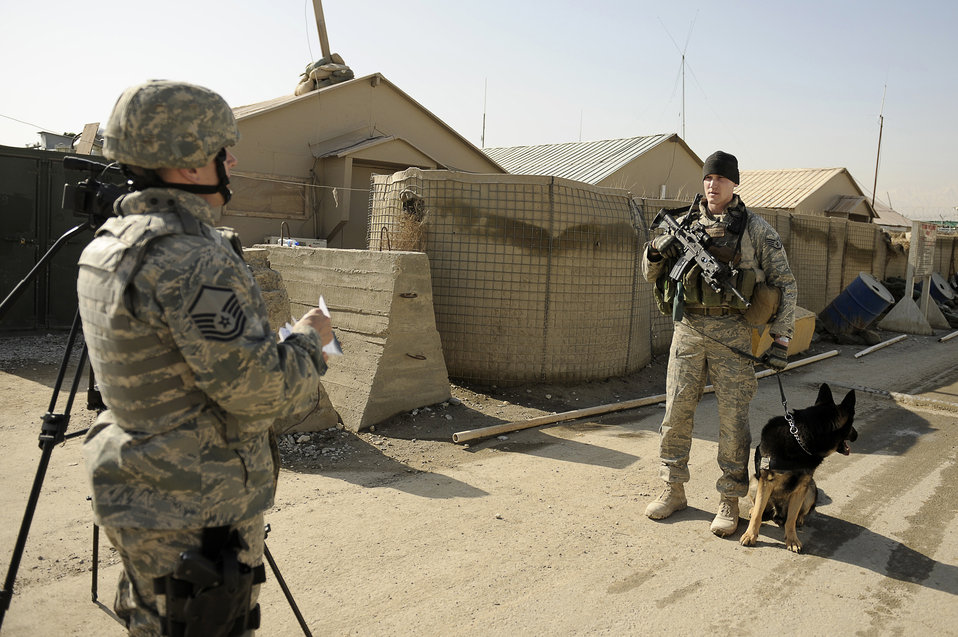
It's a dog's life at Bagram

While Master Sgt. Sebastiano Marino (left) interviews Staff Sgt. Mitchell Stein; his K-9 partner, Artus, watches his back at Bagram Airfield, Afghanistan, Feb. 2, 2010. Sergeant Marino is assigned to the Public Affairs Office for the 455th Air Expeditionary Wing. Sergeant Stein and Artus are assigned to the 455th Expeditionary Security Forces Squadron.